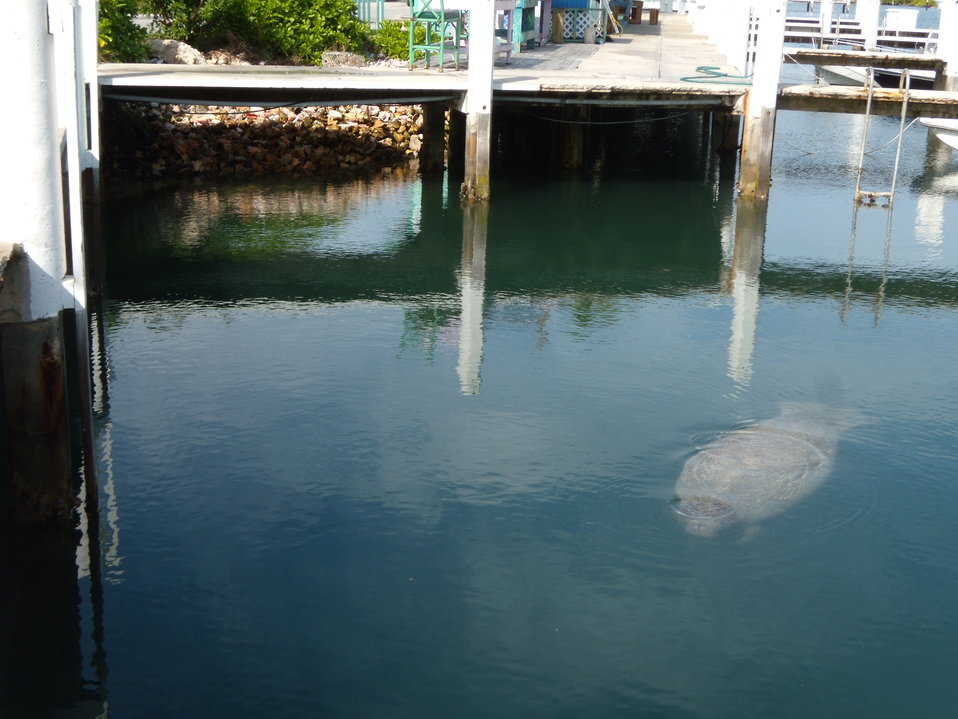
West Indian Manatee, Great Harbour Cay Harbor